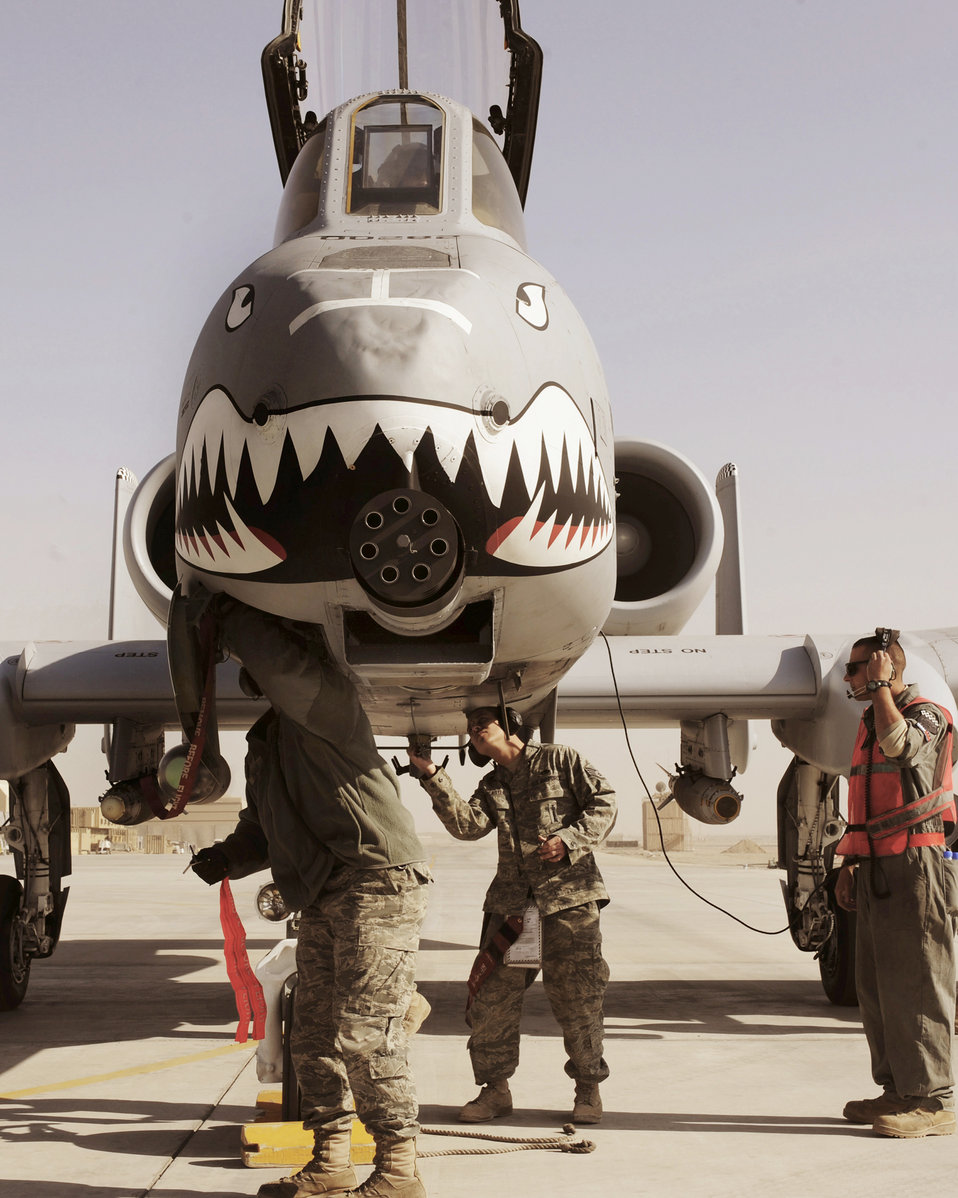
A-10C Thunderbolt II maintenance inspection

Crew chiefs install pins on an A-10C Thunderbolt II, Jan. 11, 2011, at Kandahar Airfield, Afghanistan. The 75th Expeditionary Fighter Squadron recently moved their assets to the other side of the flightline, marking the first of many moves toward consolidating the wing's missions. The crew chiefs are assigned to the 451st Expeditionary Aircraft Maintenance Squadron.